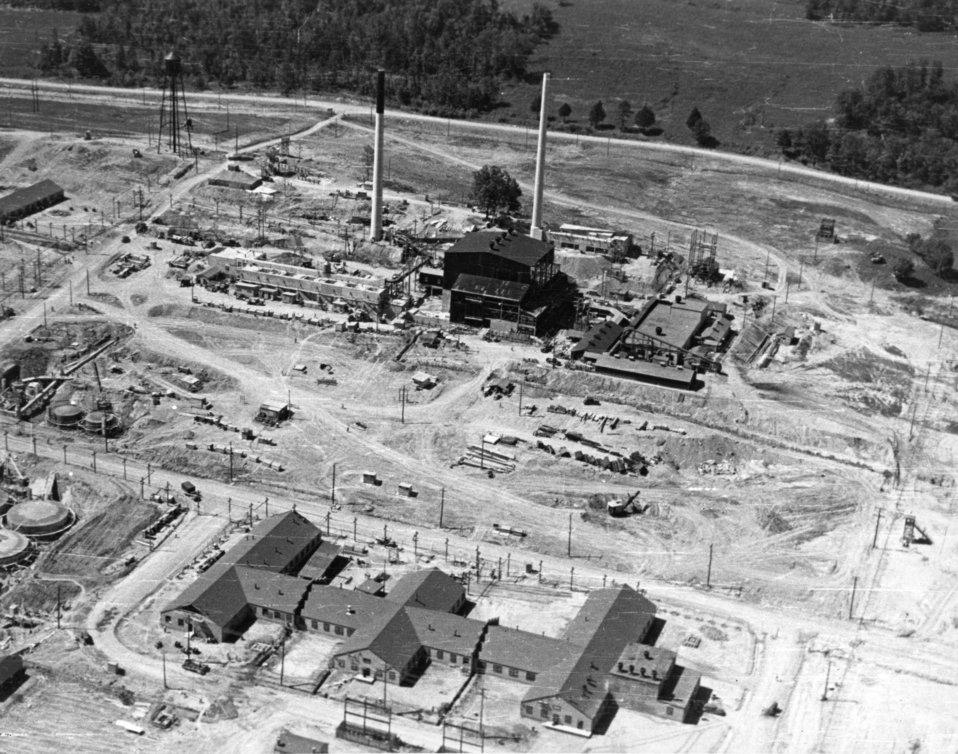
X-10 at Oak Ridge